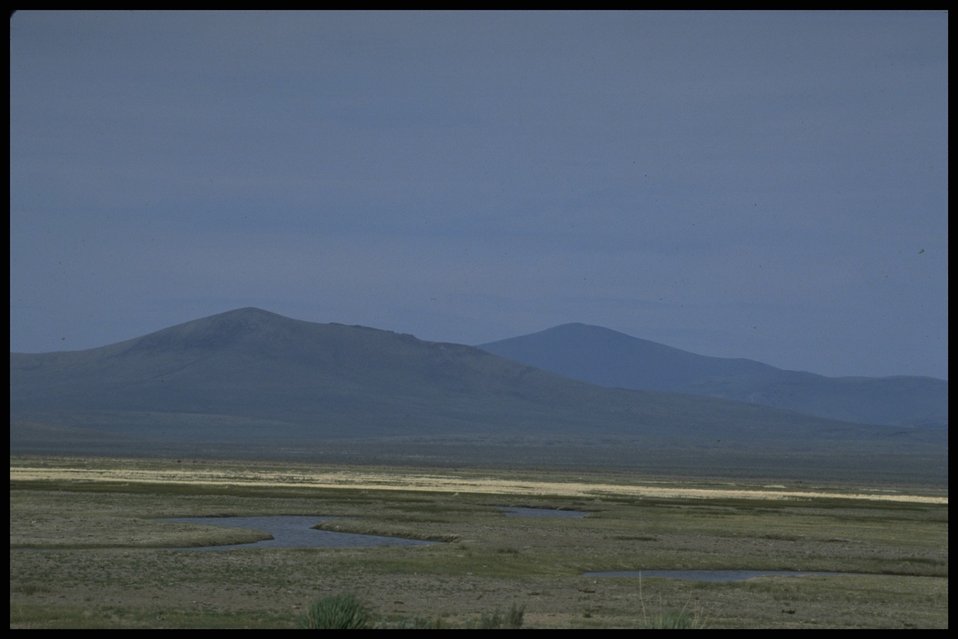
Ranch land, Lakeview District.